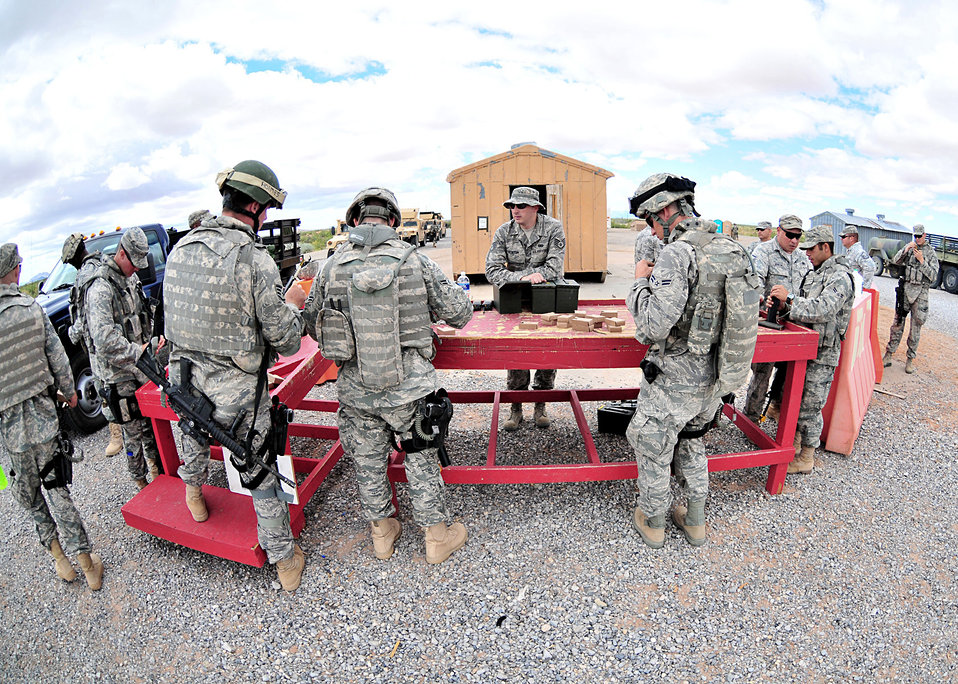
Texas Air Guard

A team of Airmen prepare for a convoy live fire exercise during the U.S. Air Force's Desert Defender area security operations course June 30, 2010, on Fort Bliss, Texas. The six-week course is run by the Texas Air National Guard's 204th Security Forces Squadron. It prepares Air Force security forces Airmen for area security operations in Iraq and Afghanistan. Airmen deploy after graduation.